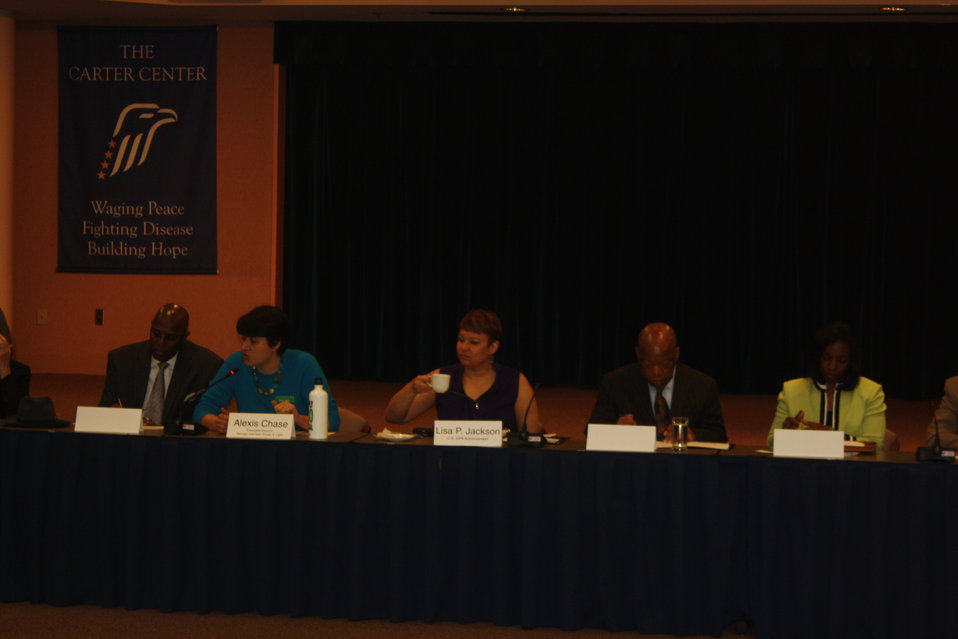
Faith-Based and Neighborhood Partnership launch at Atlanta's Carter Center